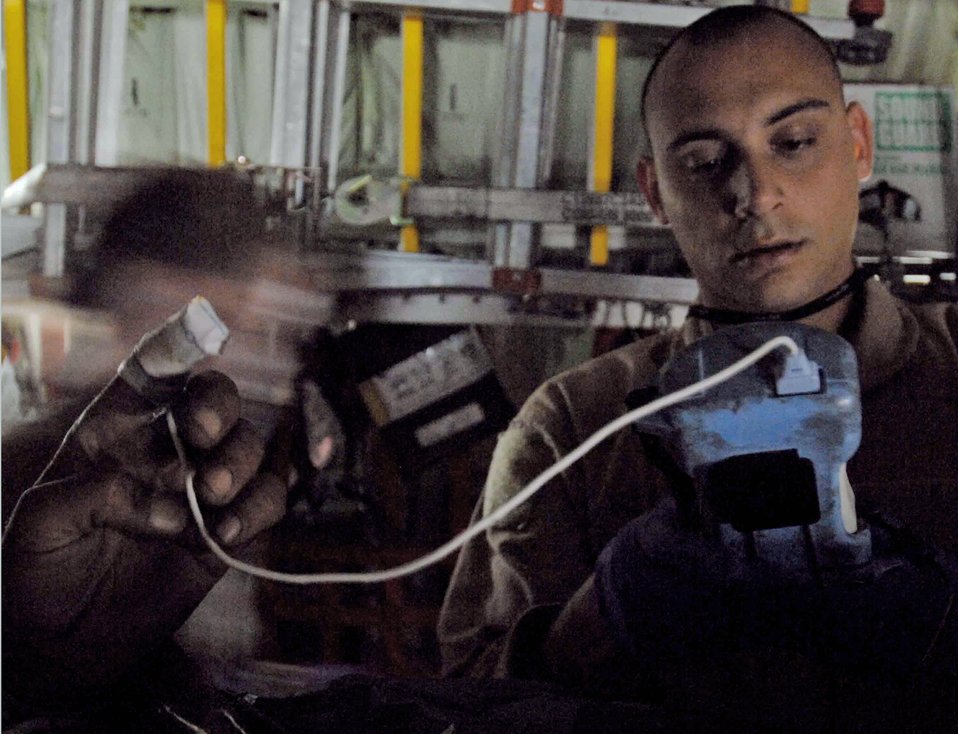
Aeromedical evacuation team tops 500 transposrts

Staff Sgt. Josh Green monitors the oxygen content and heartbeat of an Afghan patient during an Aeromedical evacuation flight out of Afghanistan. The 455th Expeditionary Aeromedical Evacuation Flight team from Bagram Air Base, Afghanistan, utilizes C-130 Hercules aircraft to provide quick aeromedical evacuation response to injured coalition forces, as well as Afghan combatants and civilians. Sergeant Green is a medical technician with the 455th EAEF.